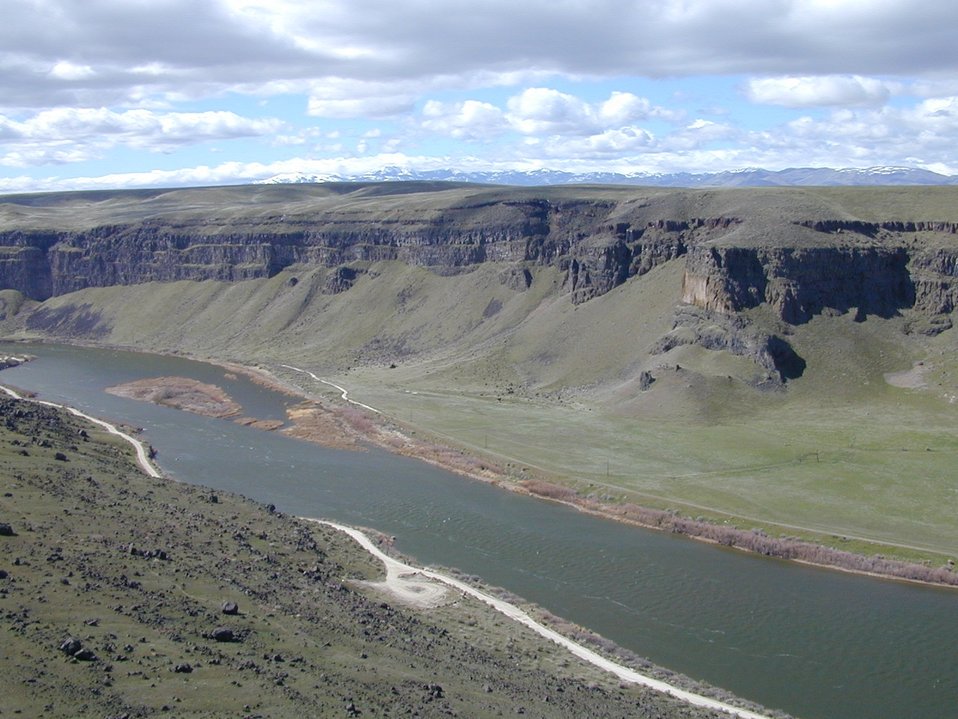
Snake River Birds of Prey National Conservation Area Lower Snake River District LSRD Snake River Canyon Scenic